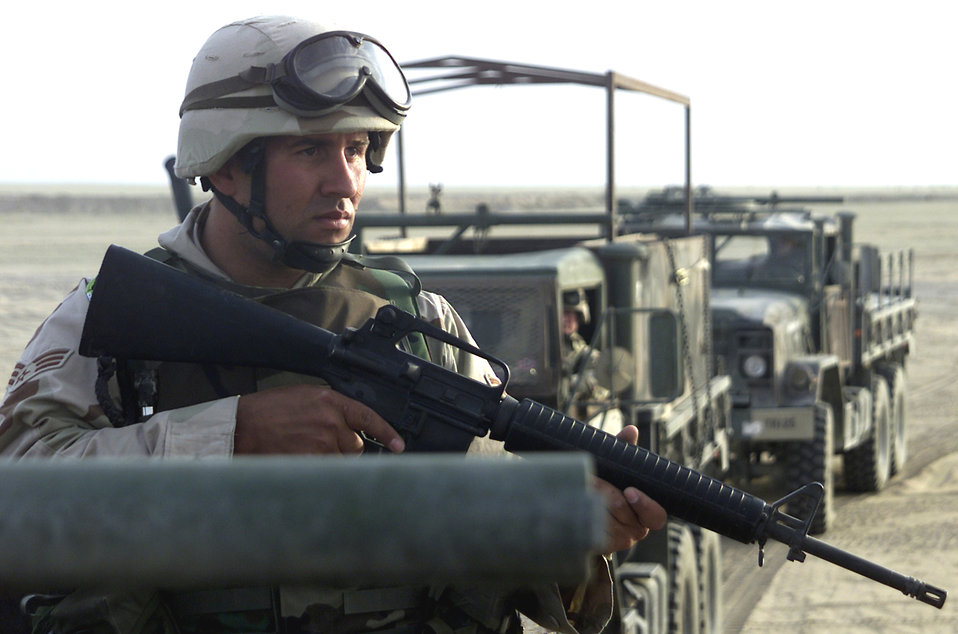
Scanning the horizon

SOUTHWEST ASIA -- Senior Airman James McGregor scans the horizon for potential threats, preparing for a convoy operation. Airman McGregor recently graduated from a training course designed to teach transportation Airmen how to survive during convoy operations in potentially hostile locations. He is a vehicle operator deployed from the Air Force Reserve's 939th Air Refueling Wing at Portland International Airport.